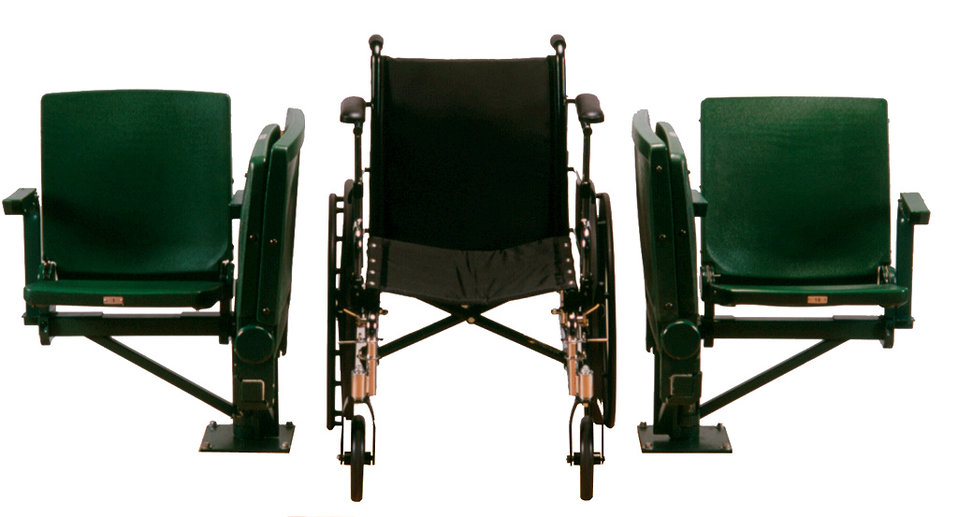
This was one of five images (PHIL# 9139 - 9143), depicting four rotating, folding stadium seats: two in the 'open' position; two in the closed-rotated position, which created a space in which a wheelchair was parked. These seats provided a unique level of flexibility for patrons of spectator events, where fixed seats were typically installed. Designed to provide the same range of seating options to people who use wheelchairs or scooters, they were able to be installed in either newly constructed or modified projects. The design combined two seat assemblies mounted and articulated from a single post. This flexibility allowed people using wheelchairs to sit with friends and family members, and therefore, feel integrated with the general public. A walking person could also use a seat, fold it up, or swing it to the side, and in this way, exit the row or aisle behind, while not disturbing the occupants of adjacent seats.